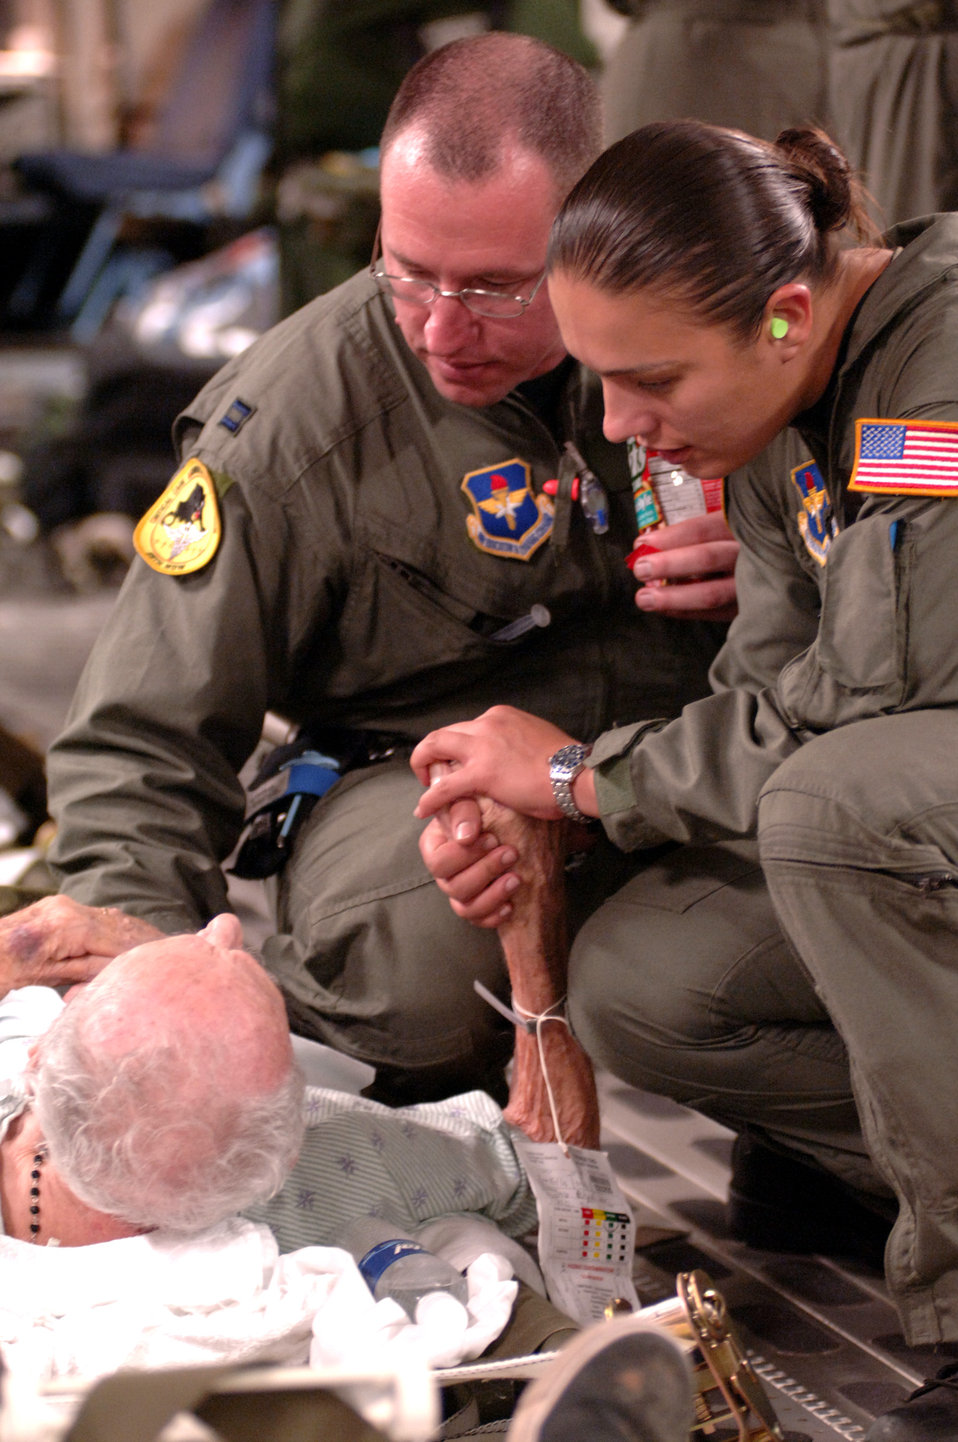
Air Force evacuates the sick and wounded

NEW ORLEANS -- Capt. Mike Dixon and Staff Sgt. Lina Gamez provide a hand to hold and reassuring words to an elderly patient who survived Hurricane Katrina. They are traveling aboard a C-17 Globemaster III from the international airport here Sept. 1st. Captain Dixon and Sergeant Gamez have teamed up with an activated Reserve C-17 crew from McChord Air Force Base, Wash., to provide aeromedical evacuation for ambulatory and critical care patients. The flight carried 28 ambulatory and six litters to Dobbins Air Force Base, Ga. Captain Dixon is an intensive care nurse with the 59th Medical Wing, Sergeant Gamez is a respiratory therapist with the 759th Surgical Operations Squadron, both from Lackland Air Force Base, Texas.